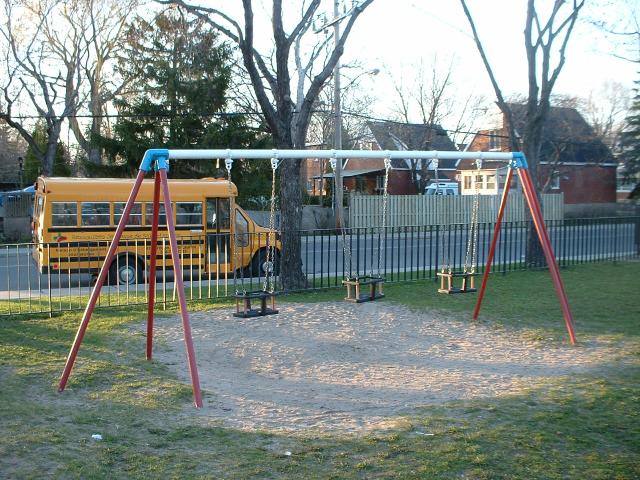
A set of baby swings. Snapshot by en:User:aarchiba.